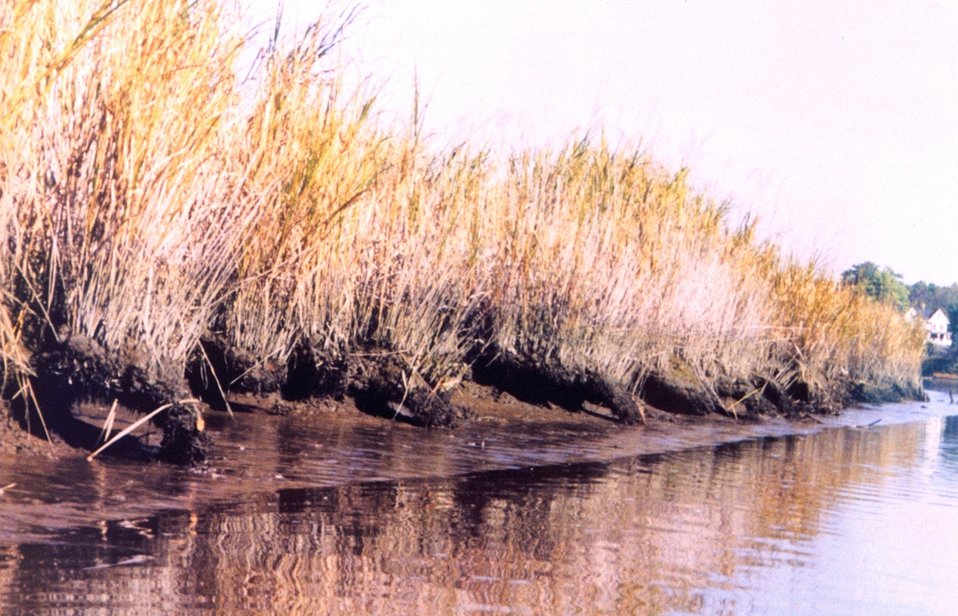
Erosion along a Patuxent River marsh area has created a series of arches.